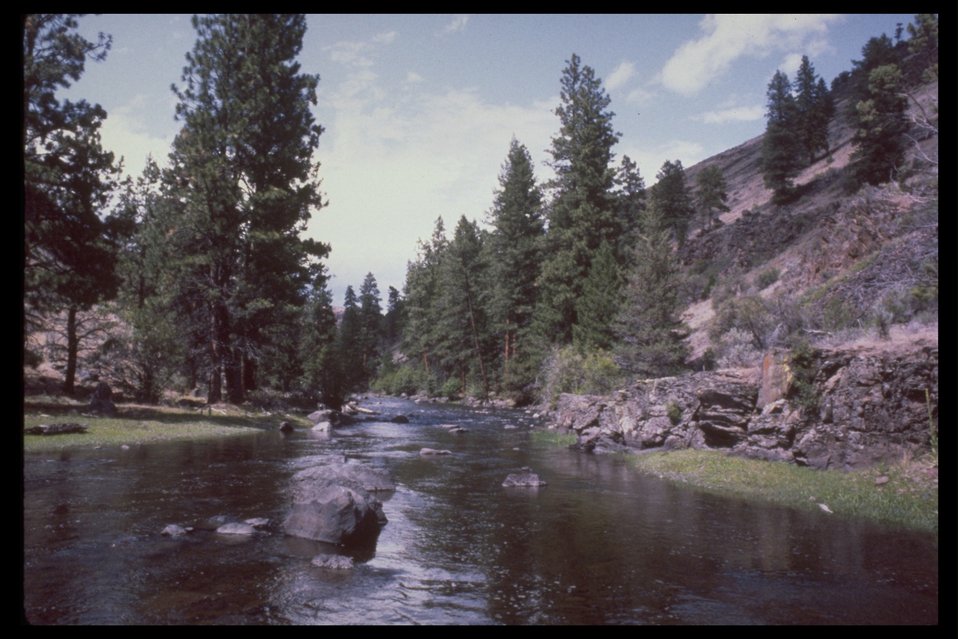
View of the Malheur River. (WSA 2-14)